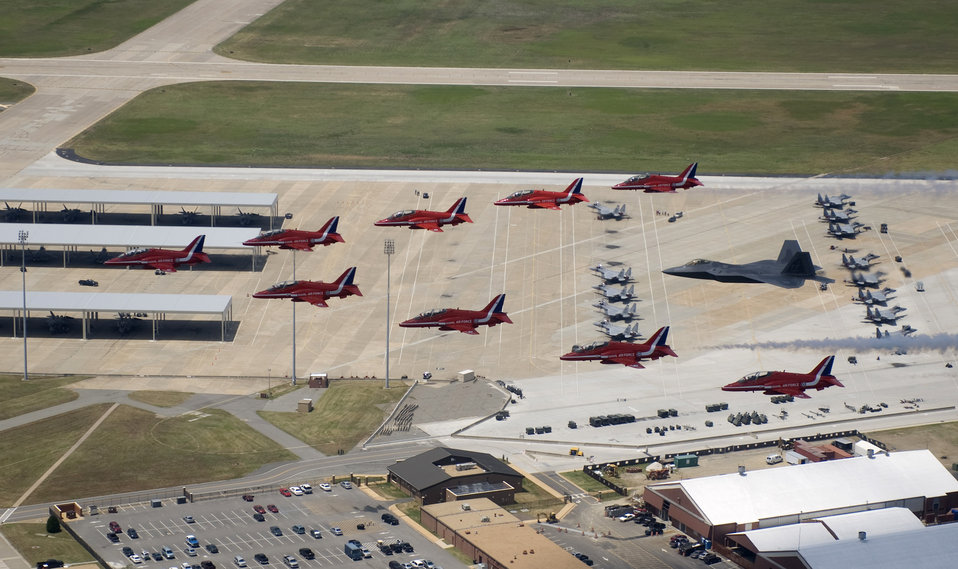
Raptor joins Red Arrows

Maj. Paul Moga flies in formation in an F-22 Raptor with the Royal Air Force Aerobatic Team, The Red Arrows, during an afternoon practice flight June 18 at Langley Air Force Base, Va. The aircraft will perform at AirPower over Hampton Roads, the Langley AFB airshow, which is scheduled for June 20 to 22. Major Moga is an F-22 Demonstration Team pilot.